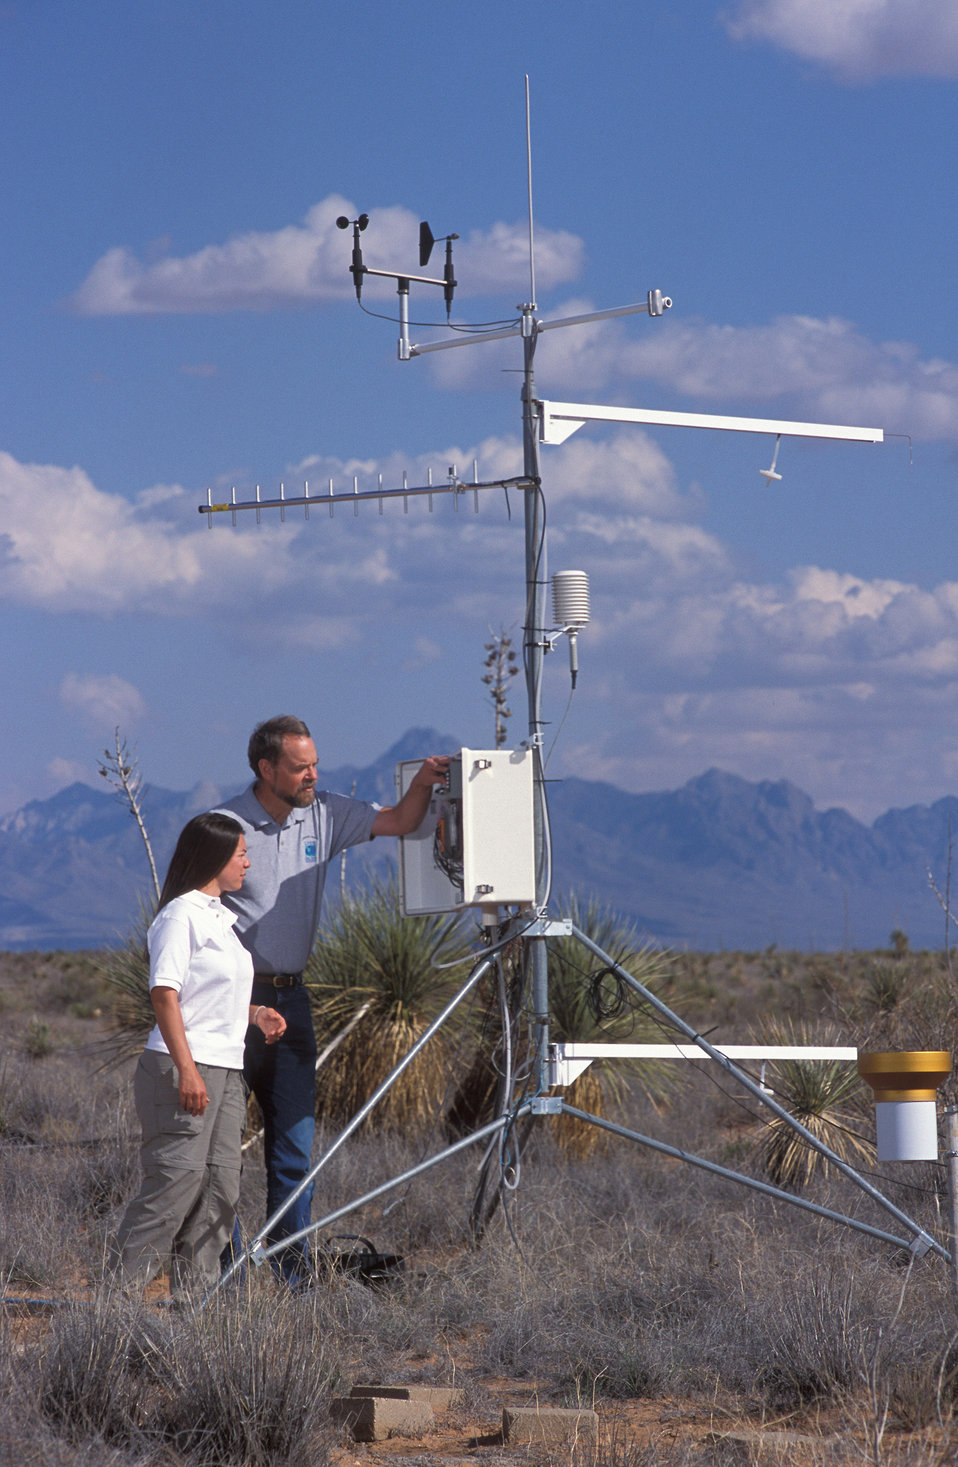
U.S. Department of Agriculture (USDA) Agricultural Research Service (ARS) technician Dara Parker and Long-Term Ecological Research (LTER) Network site manager John Anderson reset the weather recording equipment used in Jornada Range studies that focus on global climate change, desert ecology, rangeland management, and the worldwide threat of desertification.